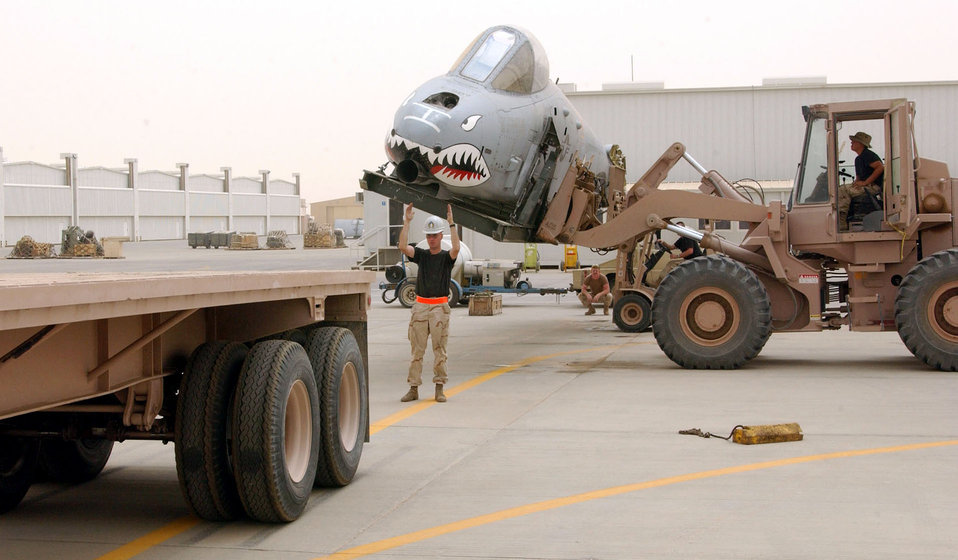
Thunderbolt lift

OPERATION IRAQI FREEDOM -- Master Sgt. Mark Kellie guides a flatbed truck into position for loading an A-10 Thunderbolt II fuselage. The aircraft received severe battle damage during a combat mission over Iraq in April and will be shipped back to the United States for repair.